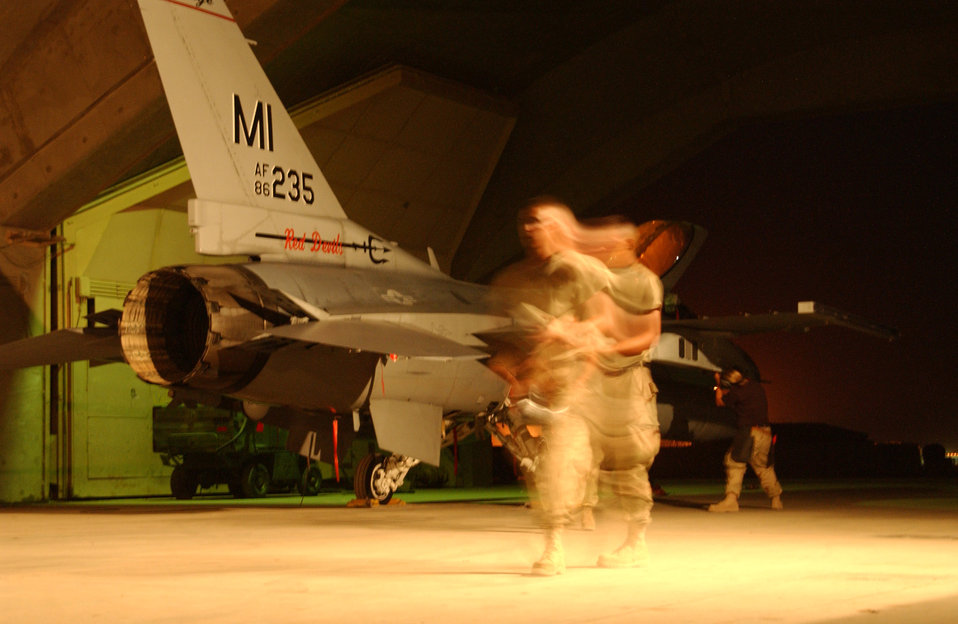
Aircraft swap helps maintain capabilities

Maintainers from the 332nd Expeditionary Aircraft Maintenance Squadron prepare a newly arrived Guard F-16 Fighting Falcon from Michigan for weapons loading Sept. 20 at Balad Air Base, Iraq.